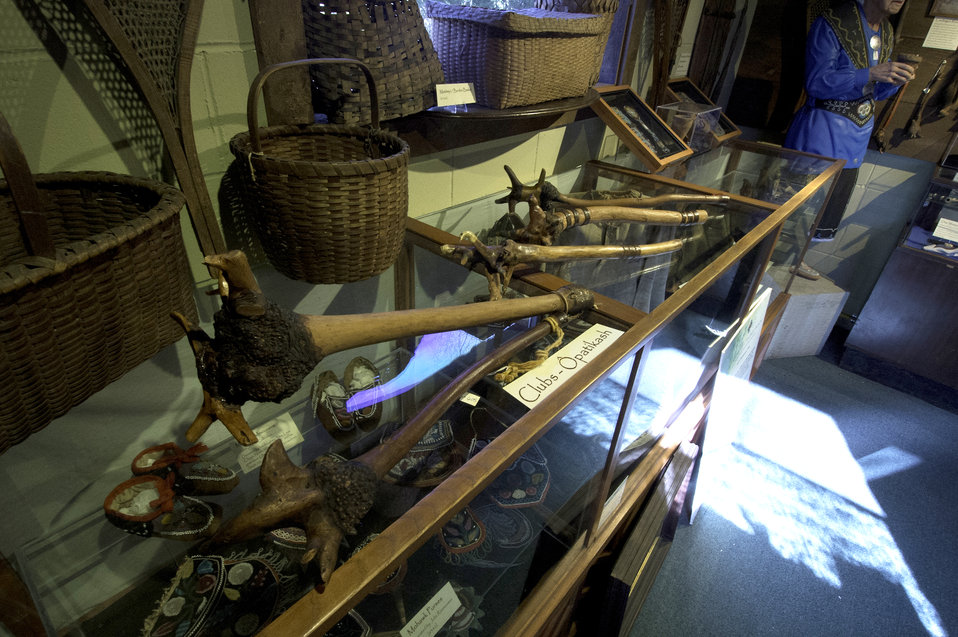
The Mohegan Tribe’s museum is the oldest Indian owned and operated museum in America. Gladys Tantaquidgeon along with her brother, Harold and father John, built the museum in 1931 in Uncasville, CT as a place to keep Mohegan treasures.